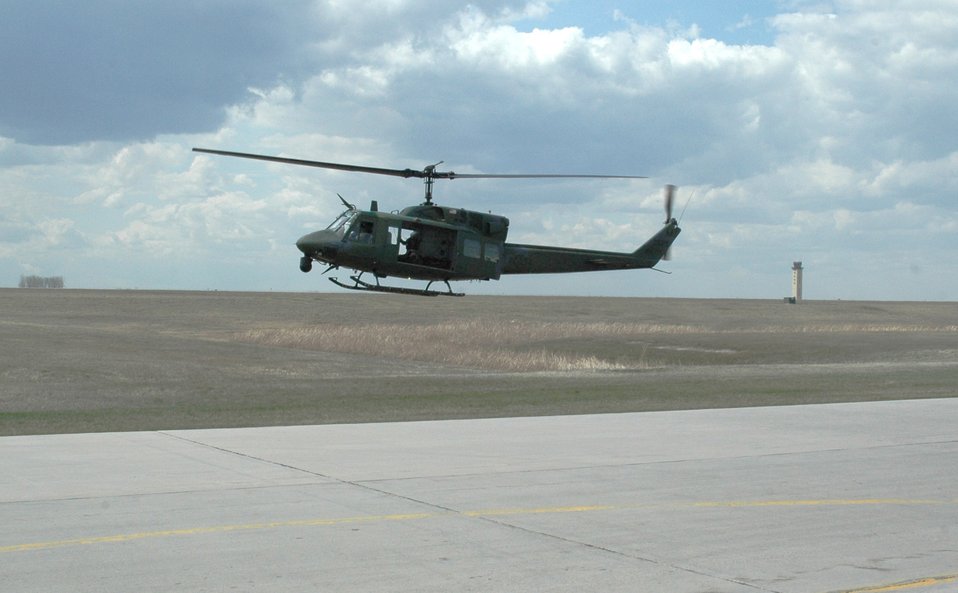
Helicopter squadron provides support, security from air

A UH-1N Huey helicopter from the 54th Helicopter Squadron takes off on a security mission April 26 from Minot Air Force Base, N.D. The mission of the 54th HS is to ensure the integrity of the 91st Space Wing's nuclear deterrence by providing immediate, flexible and effective combat helicopter support anywhere and anytime.